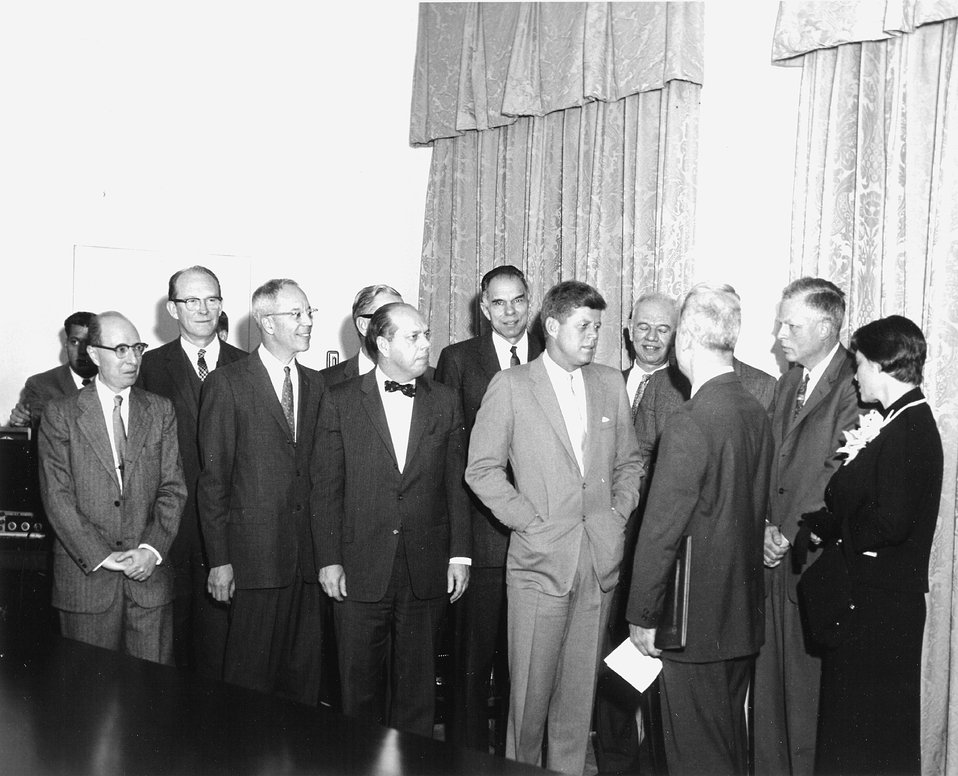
Fermi Award to Bethe, Dec. 1, 1961